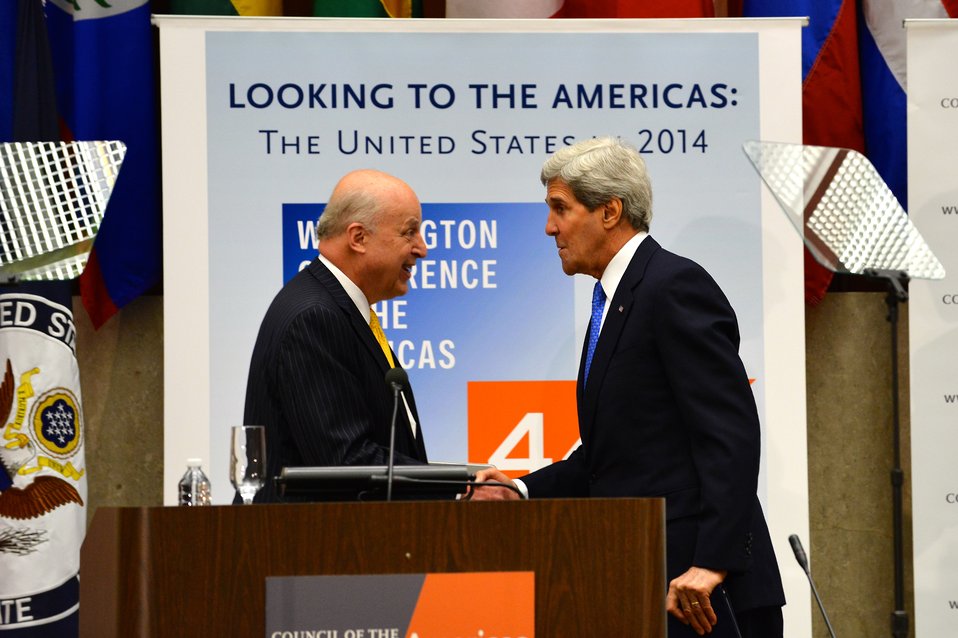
Secretary Kerry Shakes Hands With Ambassador Negroponte

U.S. Secretary of State John Kerry shakes hands with Ambassador John D. Negroponte, Chairman of the Council of the Americas, before delivering remarks at the Council of the Americas' 44th Annual Conference on the Americas at the U.S. Department of State in Washington, D.C., on May 7, 2014.